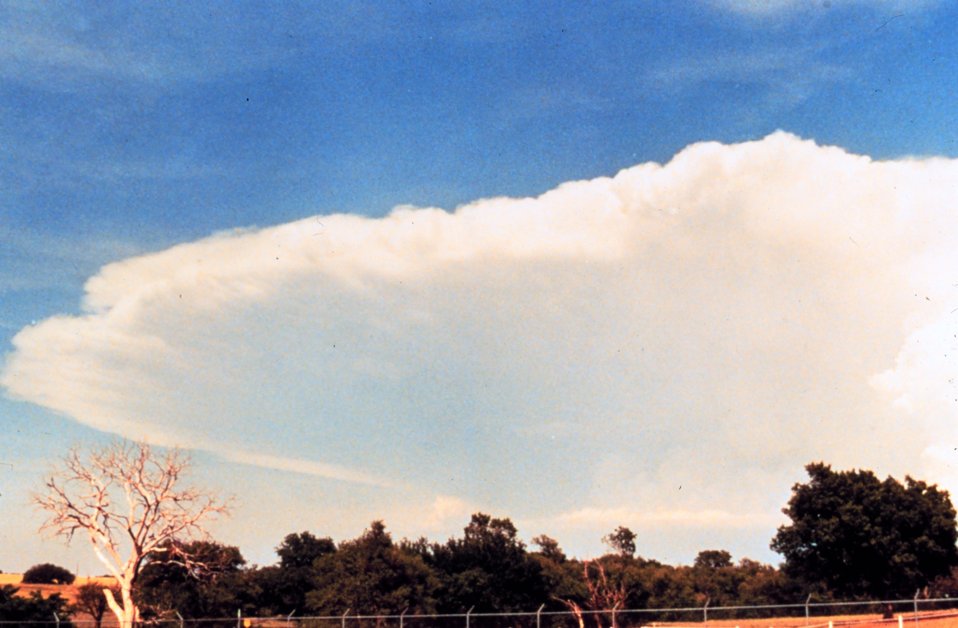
Anvil of large cumulonimbus thunderhead during early stages of developing storm.